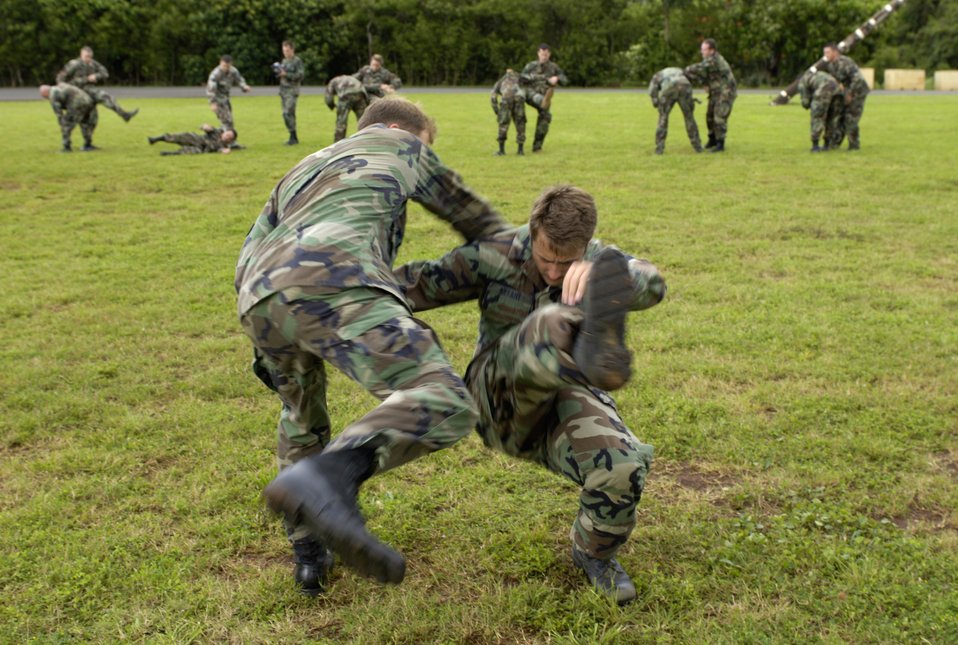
Close-combat skills

Senior Airman Glenn Wilderman takes down Senior Airman Nathanial Bryant during close-combat skills training on Thursday, April 13, 2006, at Wheeler Army Air Field, Hawaii. Airmen Wilderman and Bryant are tactical air controllers from the 25th Air Support Operations Squadron.